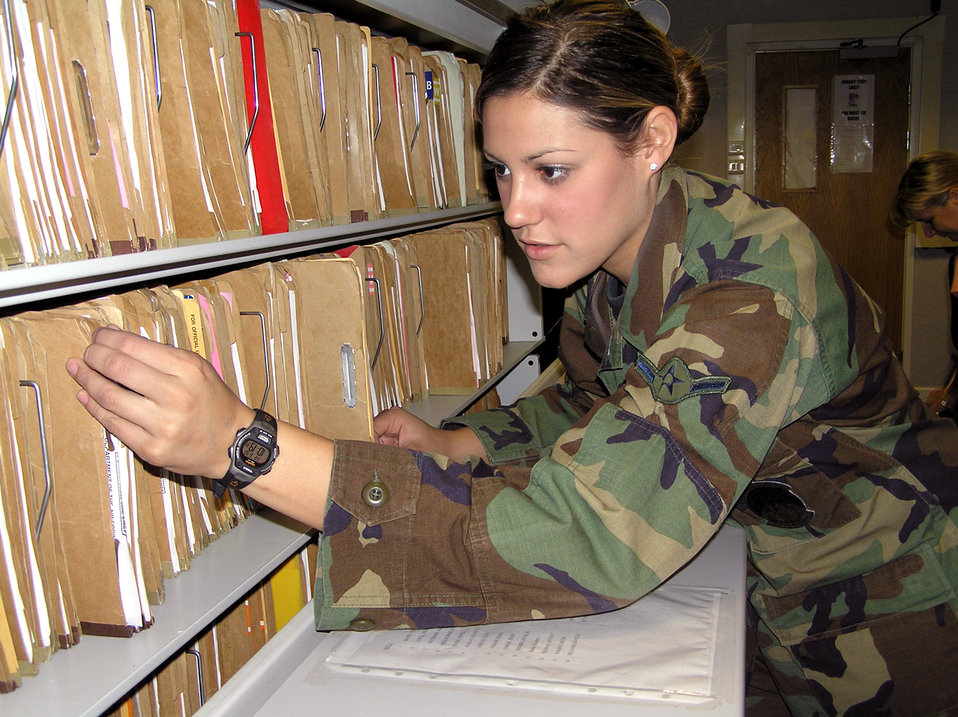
'Mosquito Wing' flies high for Air Force team

Airman Savanna Duchala pulls records for customers at the military personnel flight at Royal Air Force Mildenhall, England. Duchala is a member of the Air Force Track and Field Team. Duchala is assigned to the 100th Mission Support Squadron.